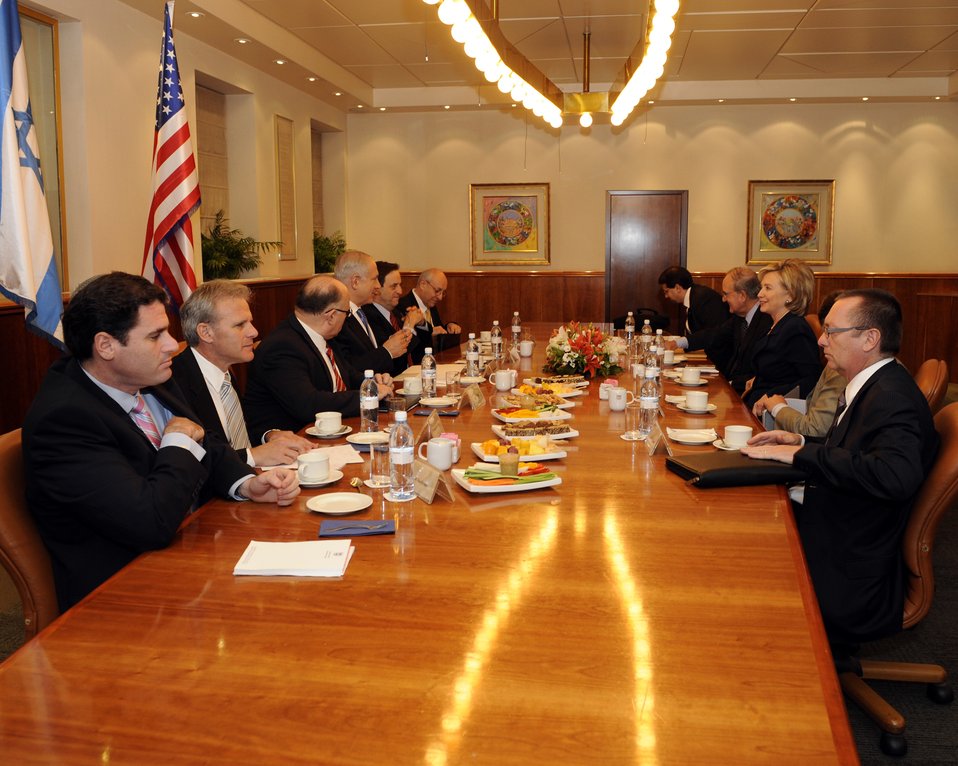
Secretary Clinton Meets With Israeli Leaders

U.S. Secretary of State Hillary Rodham Clinton and U.S. Special Envoy to the Middle East George J. Mitchell meet with Israeli Prime Minister Benjamin Netanyahu and Israeli leaders in Jerusalem, October 31, 2009.